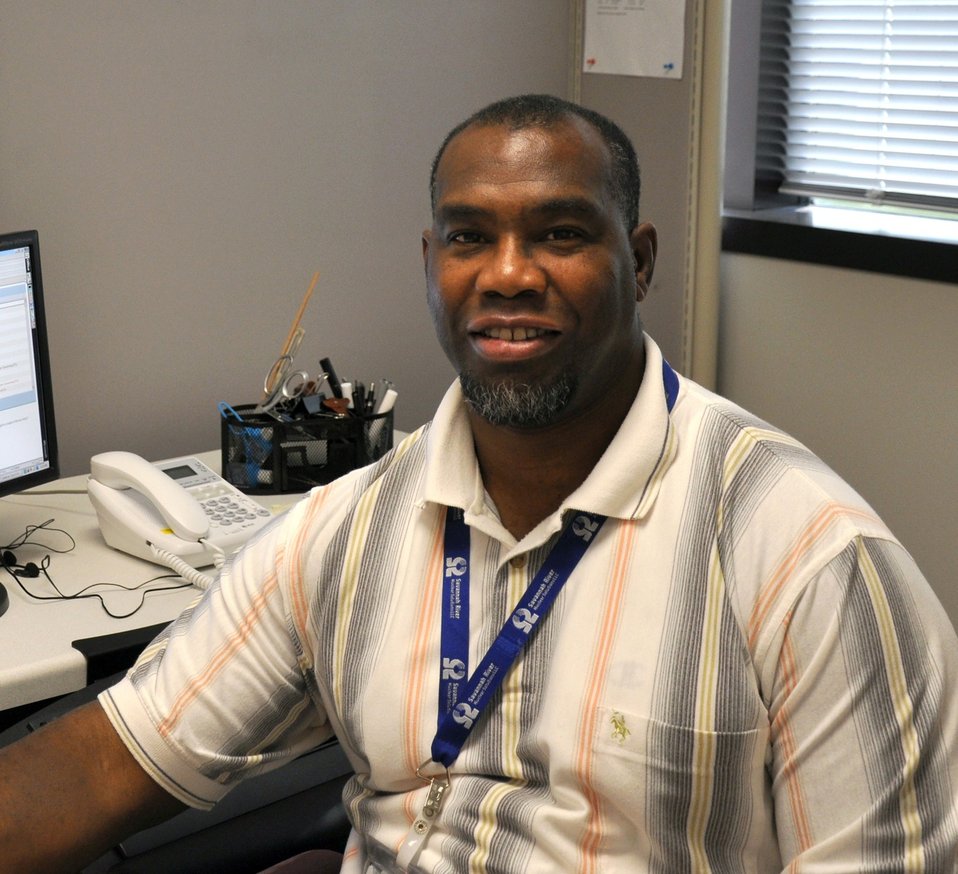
Bill Blake